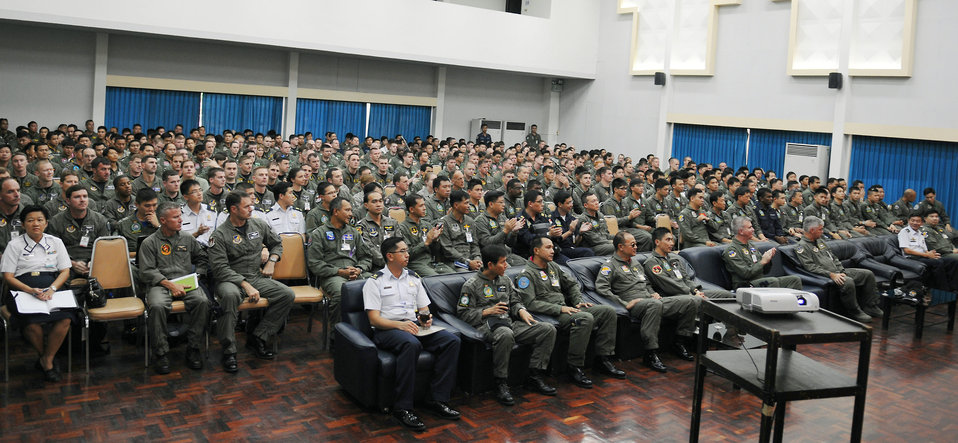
Multinational exercise Cope Tiger 2009 kicks off

U.S., Thai and Singaporean aircrew members listen to an operations brief on March 8 at Korat Royal Thai Air Force Base, Thailand, in preparation for Cope Tiger 2009. Cope Tiger is an annual, multilateral large force aerial exercise conducted in Thailand including U.S., Thai and Singaporean military forces. The two-week exercise includes both flying and humanitarian missions conducted in Korat and Udon Thani, Thailand. Cope Tiger 2009 kicked off March 9 and will conclude March 20.